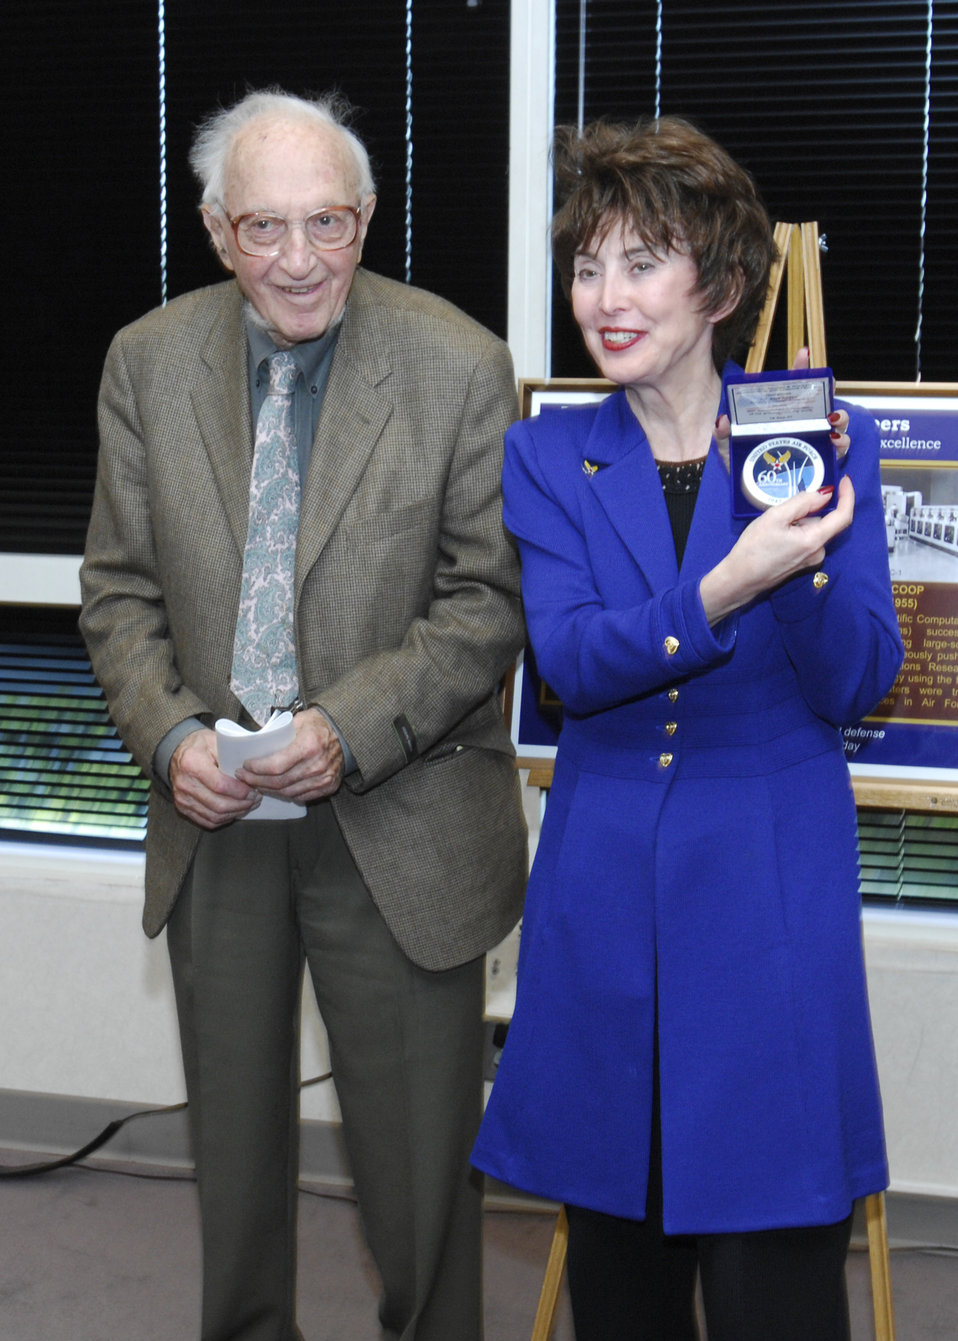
Analysts recall pioneering scientist

Dr. Jacqueline R. Henningsen, director for Air Force Studies and Analyses, Assessments and Lessons Learned, presents Dr. Alex Orden with a 60th Air Force anniversary medallion Sept. 18, 2007.